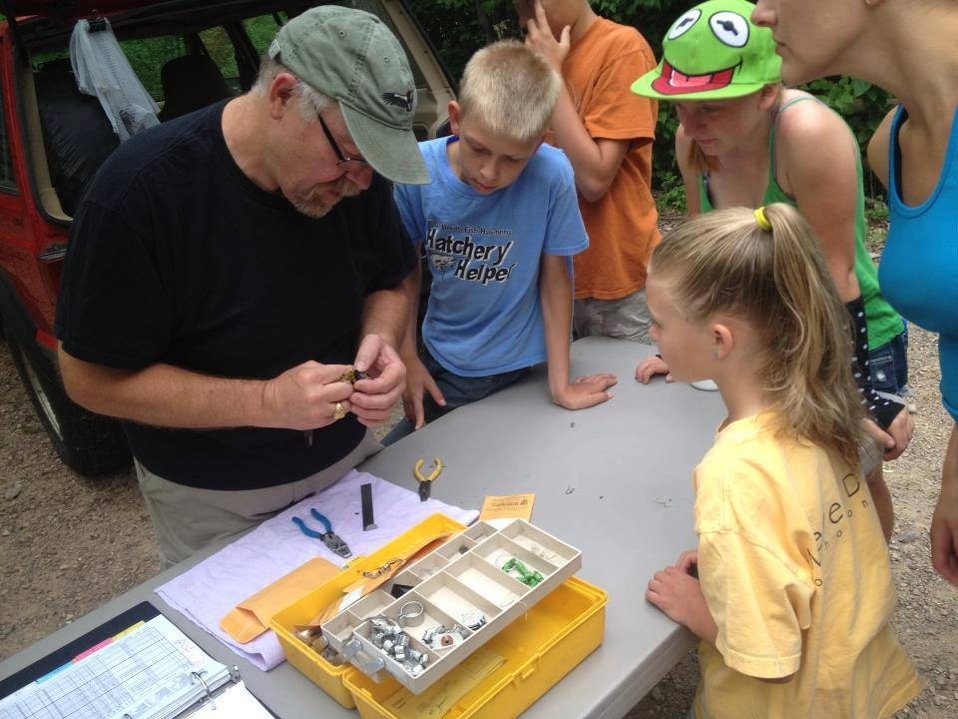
Professor Kent Jenson of SDSU teaching the Hatchery Helpers about his career as an ornithologist.